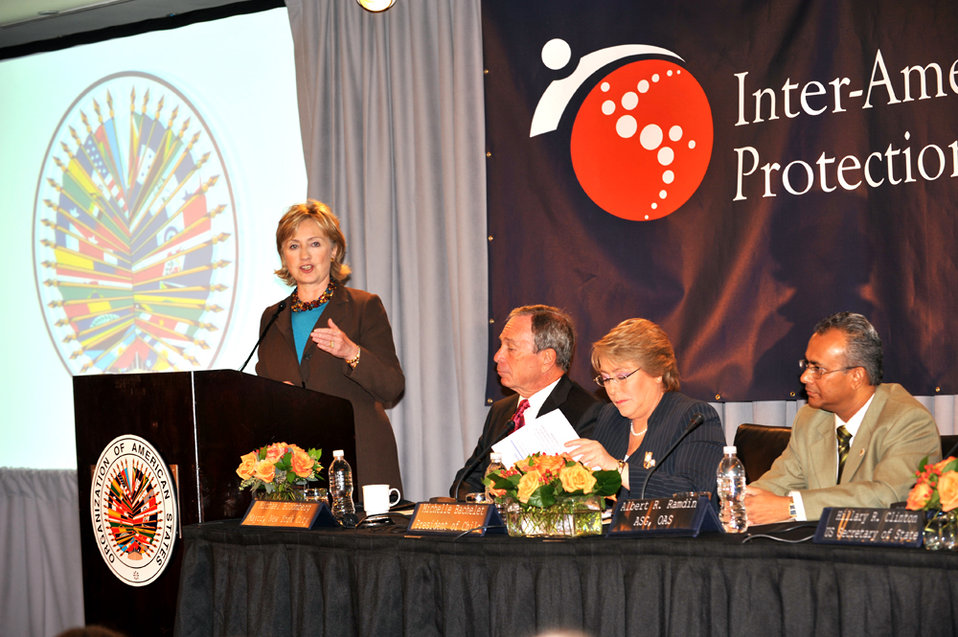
UNGA 2009: Secretary Clinton Speaks at Inter-American Social Protection Network

U.S. Secretary of State Hillary Rodham Clinton delivers remarks at the Launch of the Inter-American Social Protection Network at the Westin hotel during the 64th Session of the UN General Assembly in New York City, New York September 22, 2009.